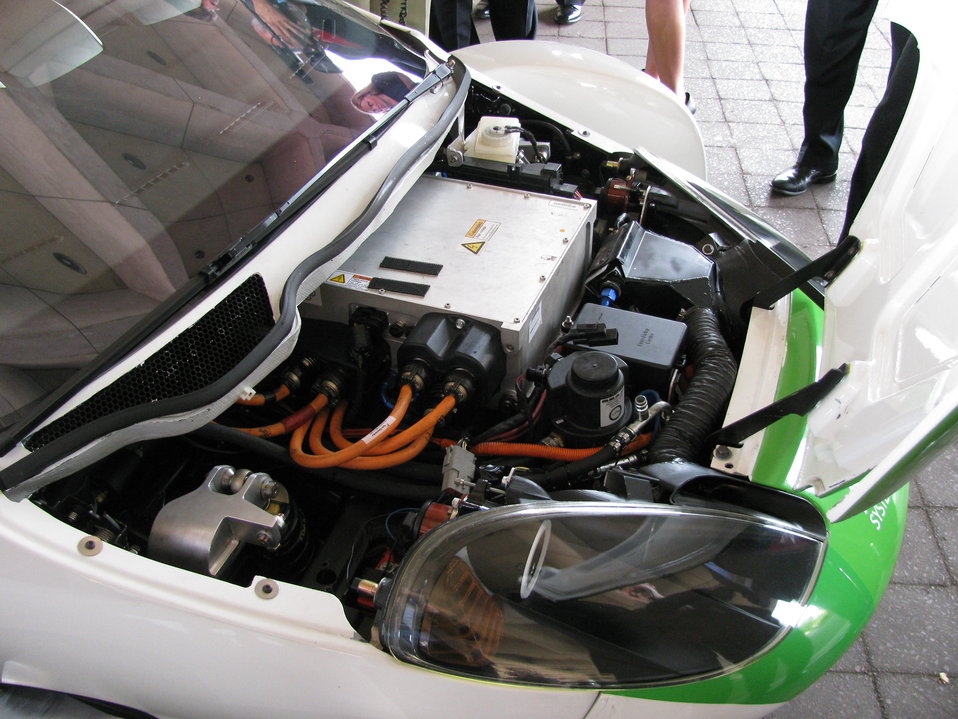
X Prize 051